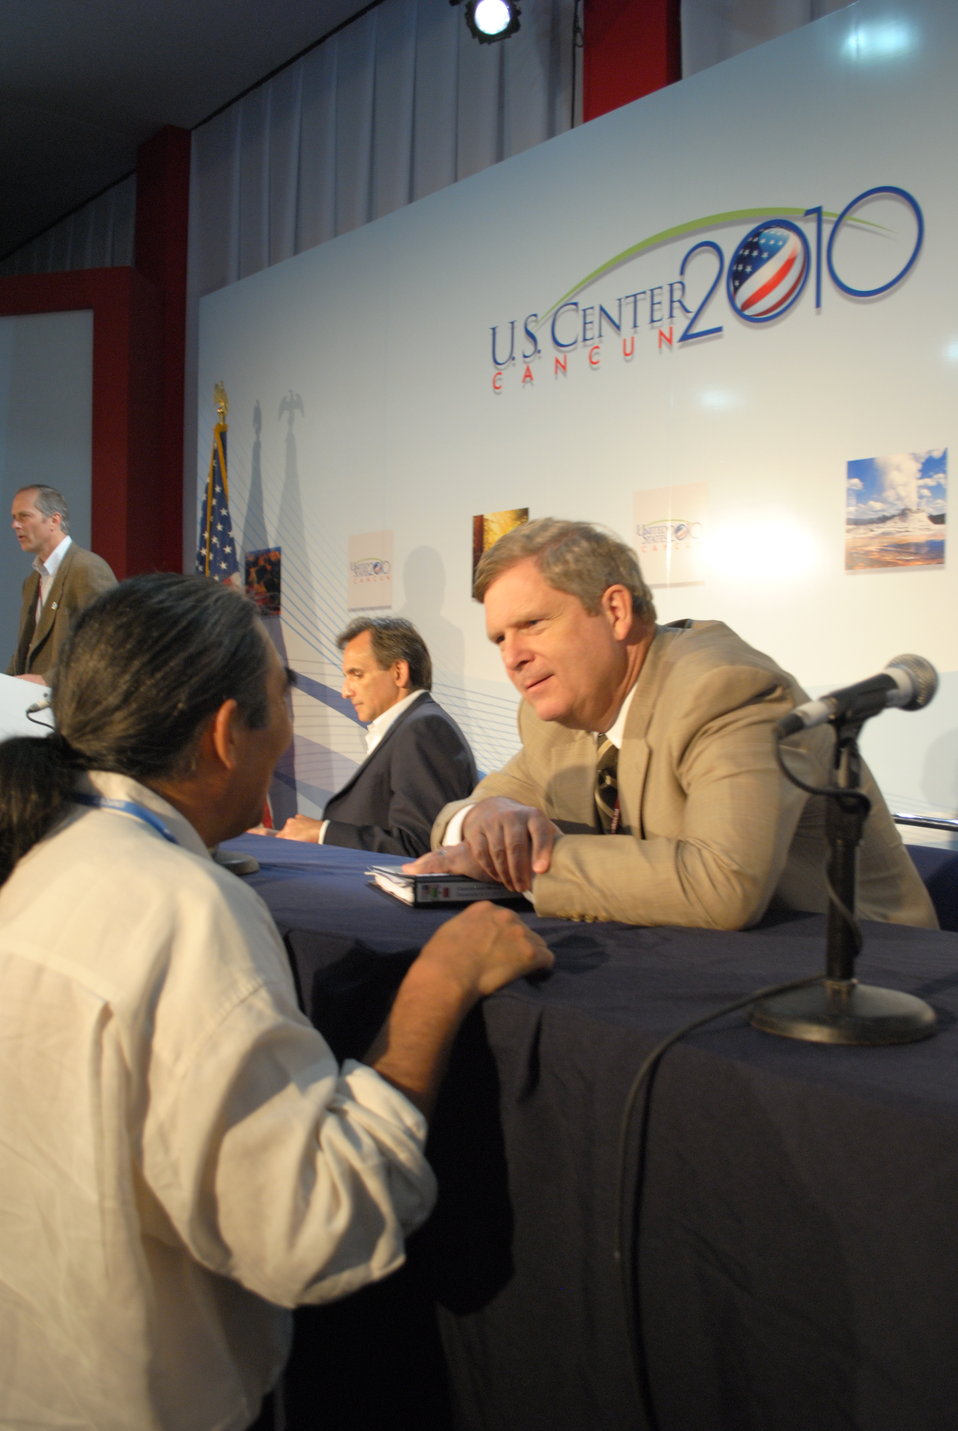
Secretary Vilsack Speaks With a Member of the Audience

U.S. Secretary of Agriculture Tom Vilsack speaks with a member of the audience after the presentation, USDA Actions to Meet the Challenge of Climate Change, at the U.S. Center at COP-16 in Cancun, Mexico, on December 9, 2010.